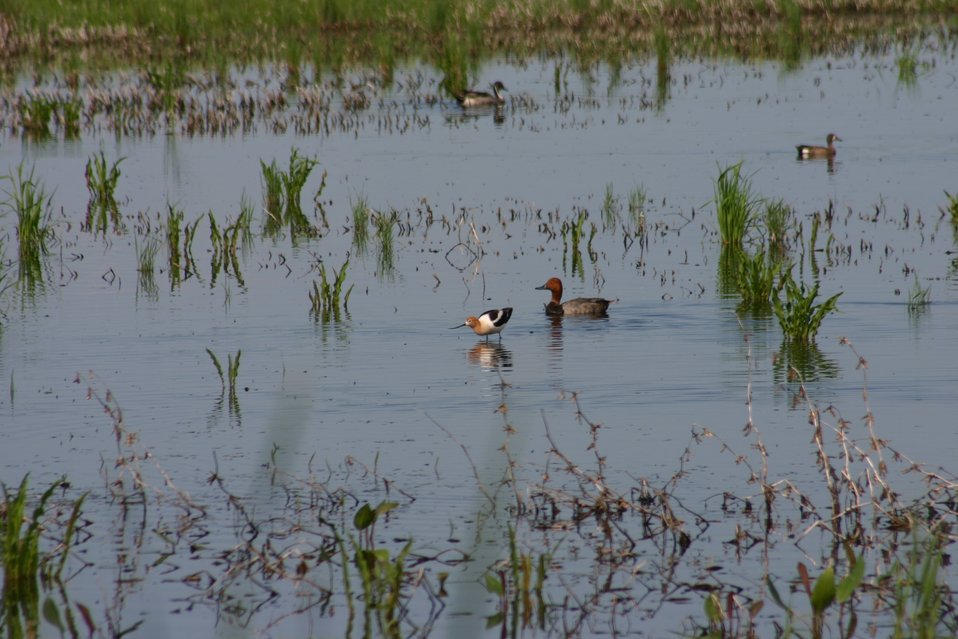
Waterfowl in Wetlands

American acovet and other waterfowl in wetlands. The efforts of the joint venture partners are creating large connected natural areas that benefit countless species of fish and wildlife.